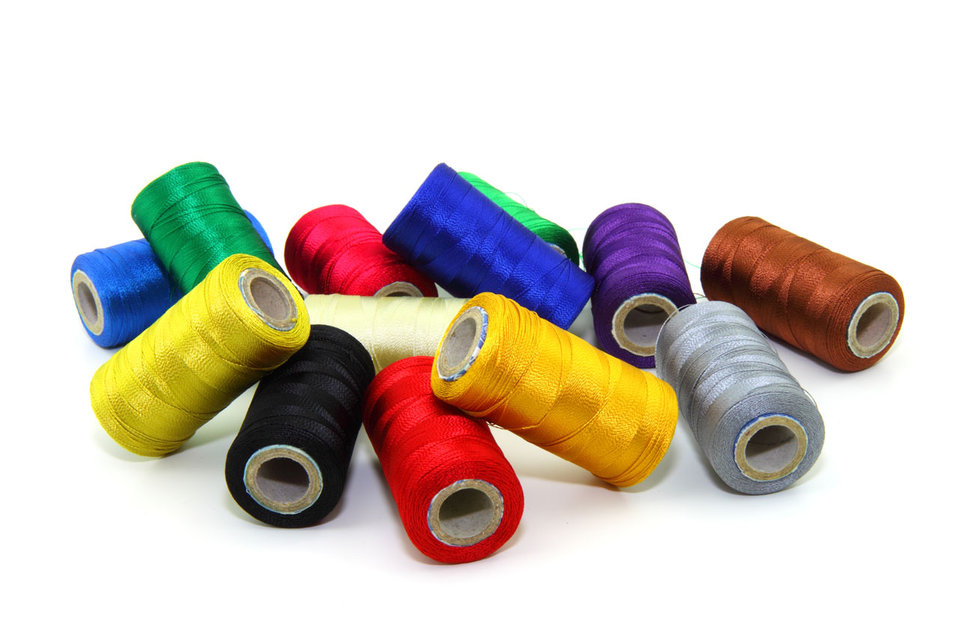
Sewing threads

Colorful sewing threads on white background.